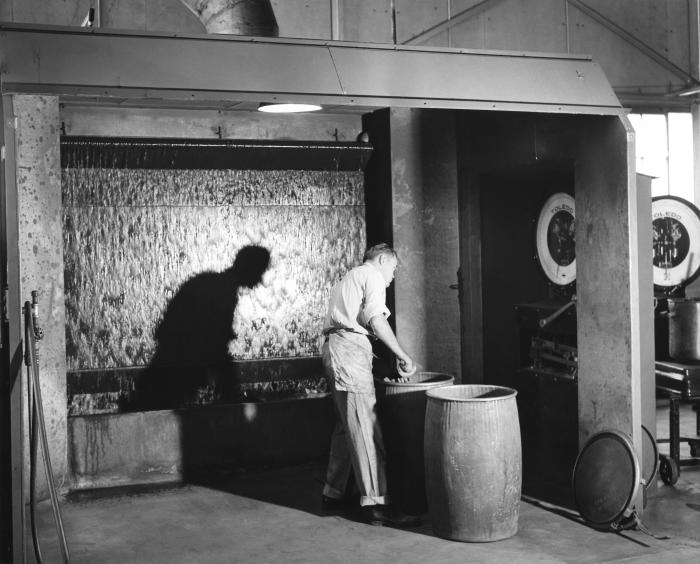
This historical photograph was provided by the Center for Disease Control's (CDC), National Institute for Occupational Safety and Health (NIOSH). It depicted a factory worker at a Carboloy� plant, who was holding a scooper filled with an unidentified powder, while standing in front of a water filtered booth, which could be seen cascading down in a sheet behind the worker. Carboloy� is an alloy created by combining tungsten with cobalt or nickel and carbon. The alloy is extremely hard, harder than steel, and is used to cut steel, porcelain, quartz and other brittle materials. Water is often used to extract airborne particulates from workplace environments that are subsequently filtered from the water, which is then recirculated.